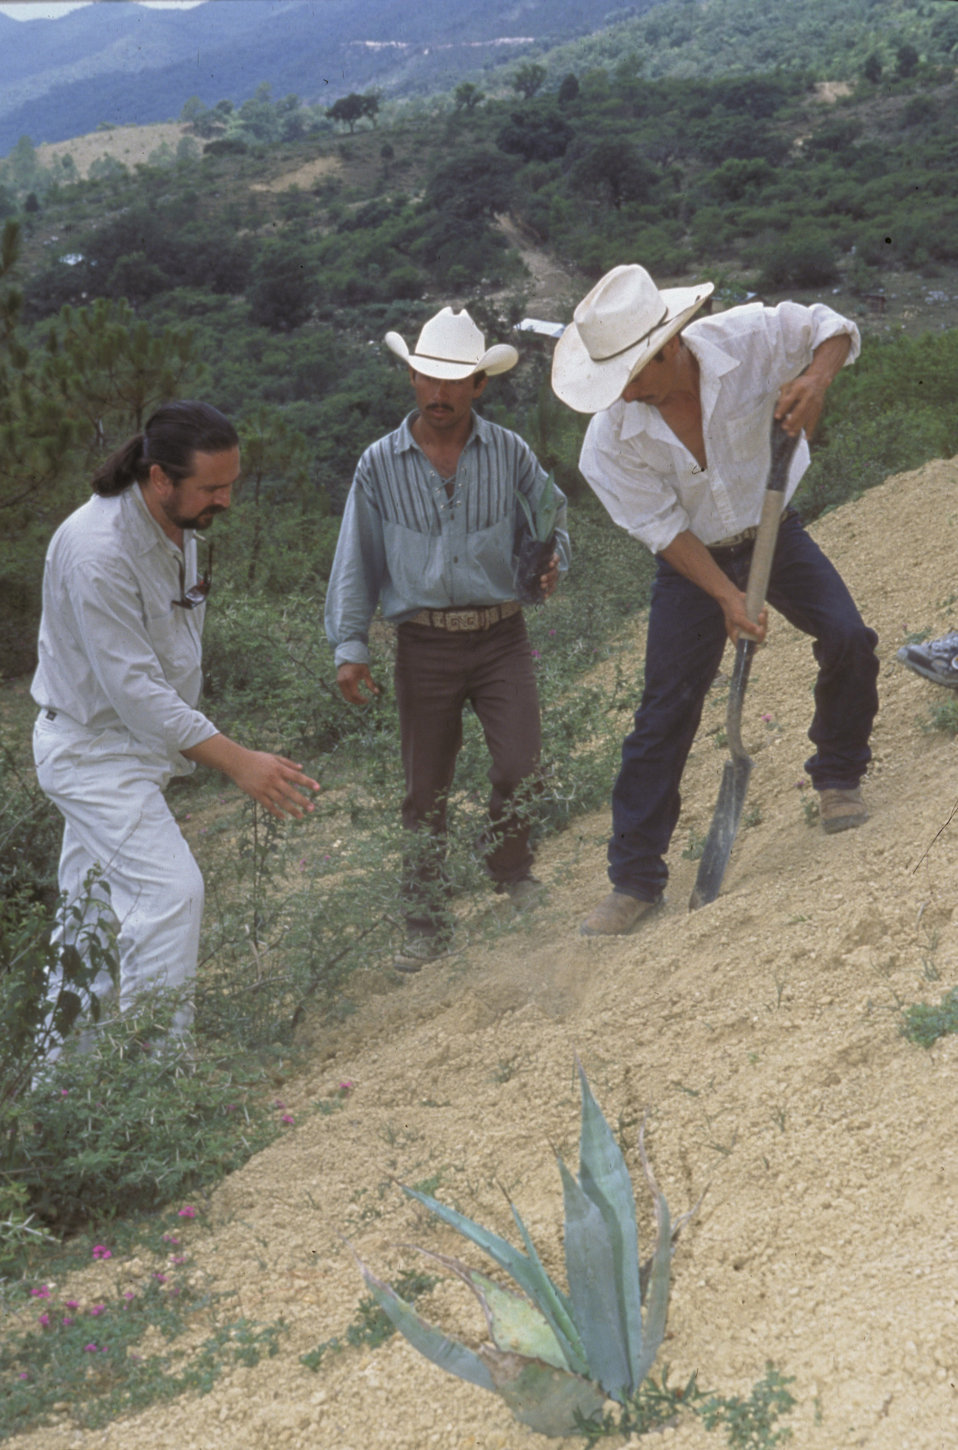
Agaves for erosion control

Planting native plants on slopes to control erosion around bat caves.